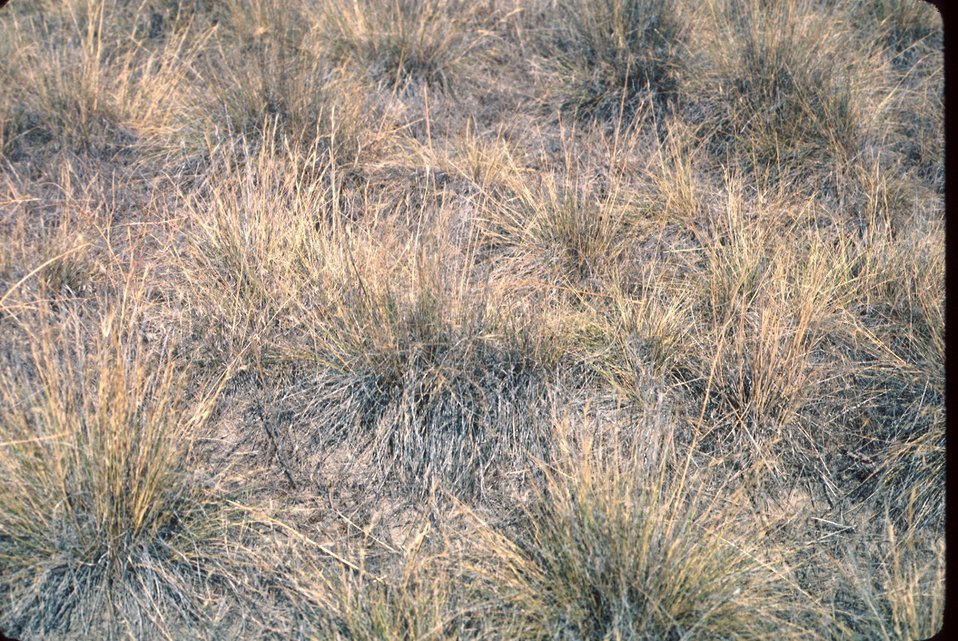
Cheatgrass Bromus tectorum,